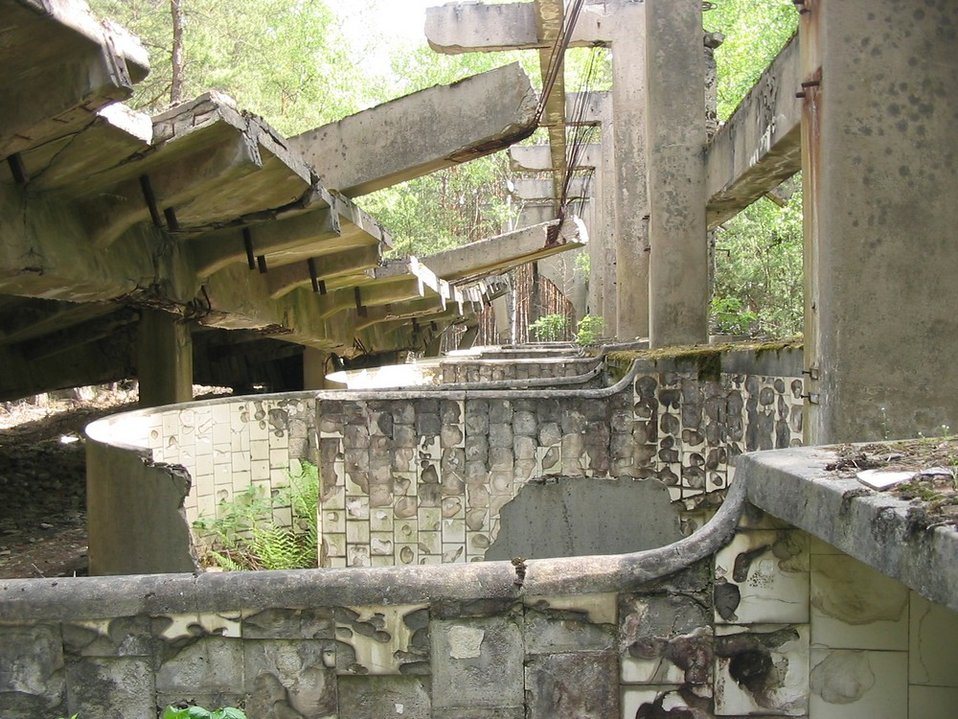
Polski: pozostałości fabryki DAG Alfred Nobel w Krzystkowicach Autor: Mohylek